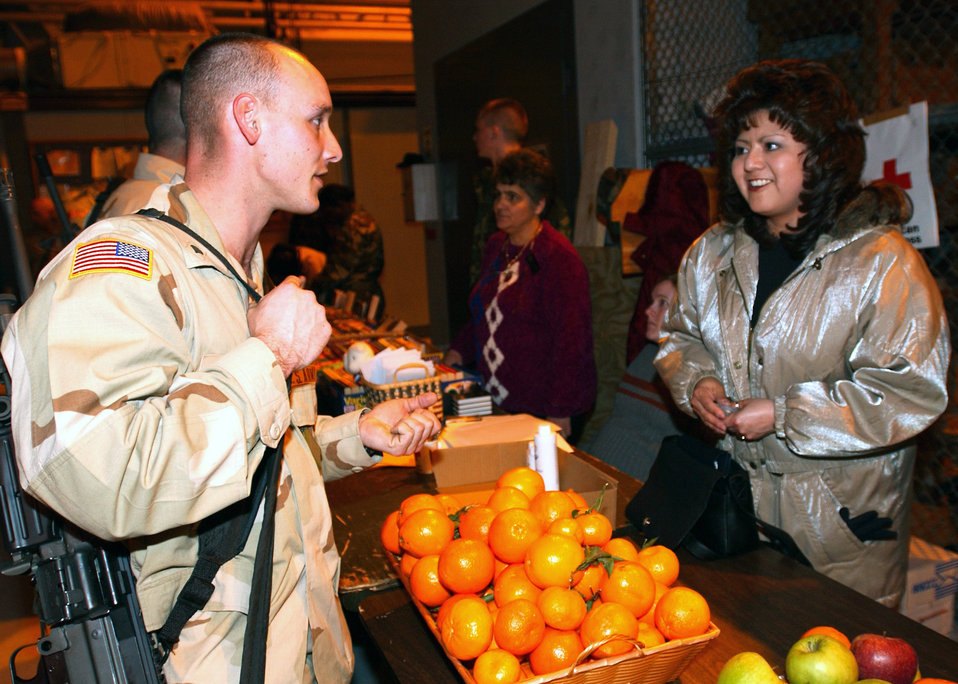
Euro exchange

AVIANO AIR BASE, Italy -- Army Spc. Thomas Rinker, stationed out of Fort Lee, Va., asks Teresa Lyons, a volunteer here, if she could exchange dollars to euro as a souvenir. Rinker and his company were awaiting transportation to a forward-deployed location.